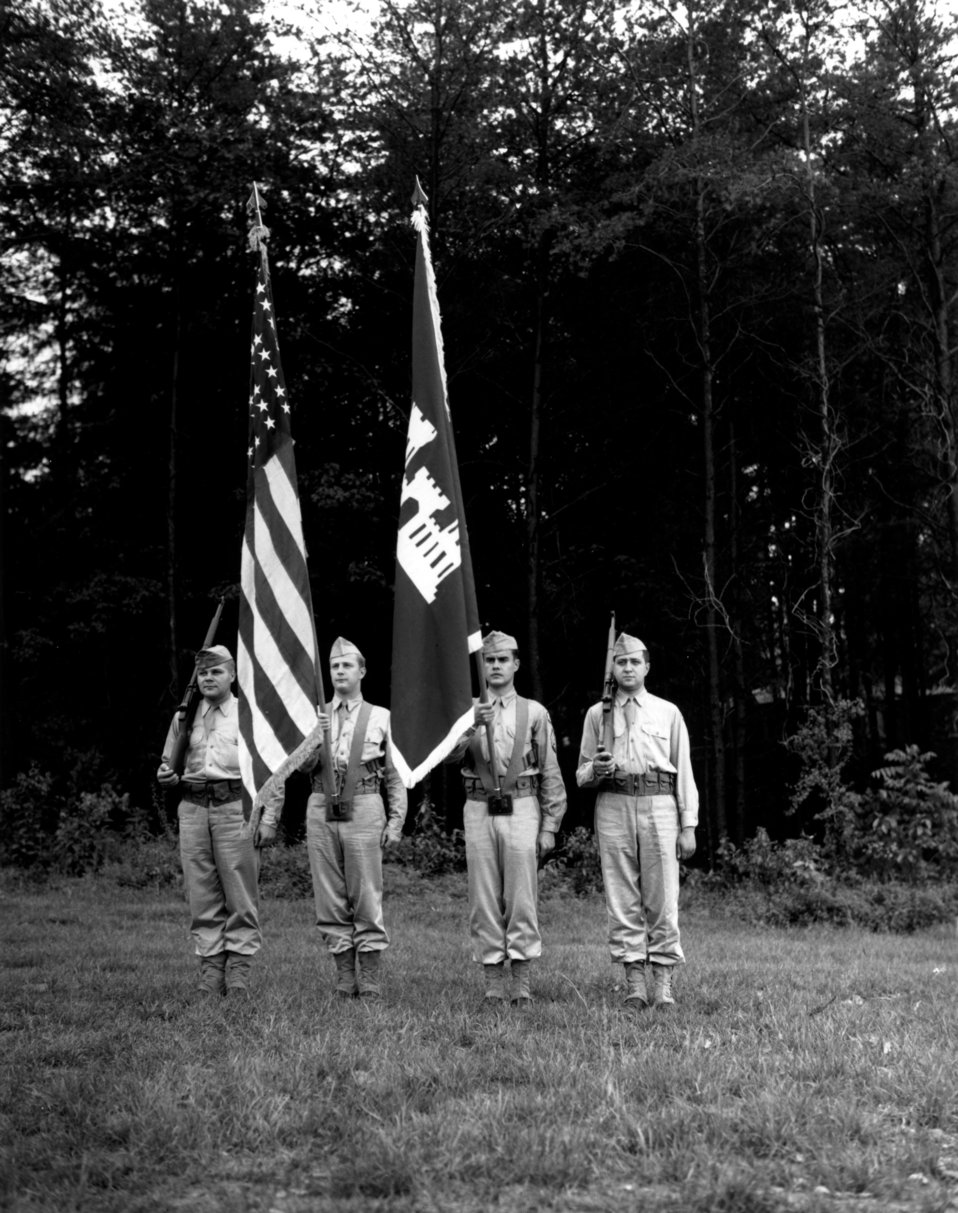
Army Activity at Oak Ridge